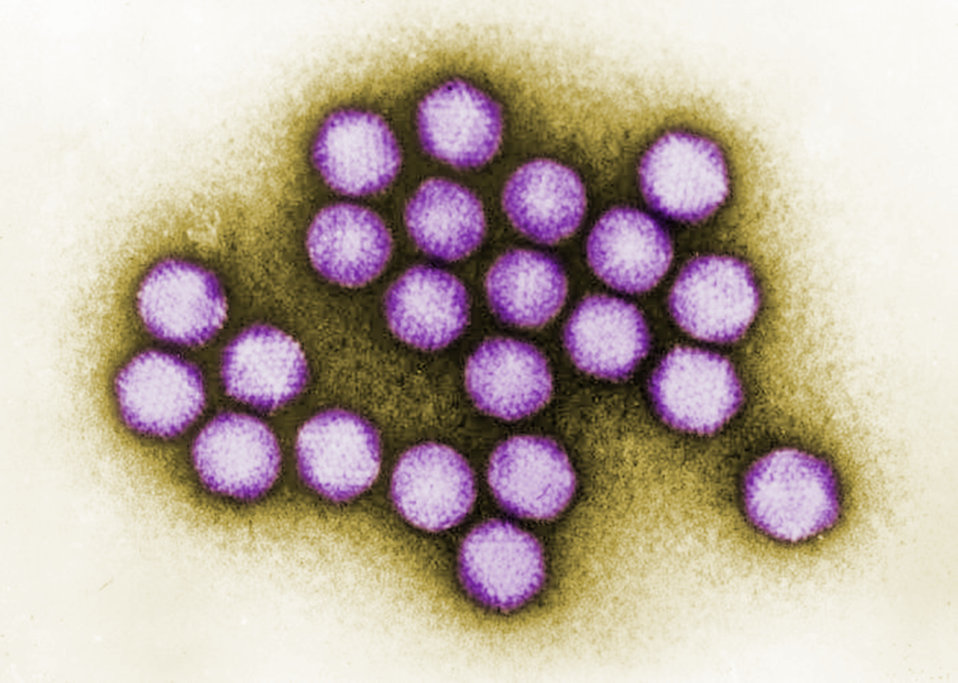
Colorized transmission electron micrograph of adenovirus